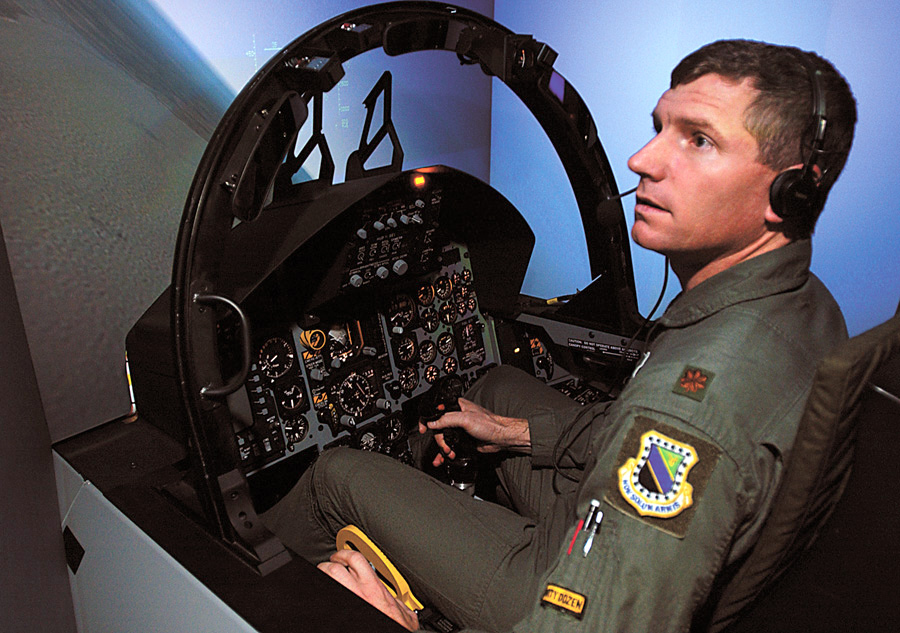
F-15C simulator

ELMENDORF AIR FORCE BASE, Alaska (AFPN) -- Maj. Tom O'Berg hones his flying skills in the mission training center F-15C simulator here. O'Berg is assigned to the base's 3rd Operations Support Squadron.